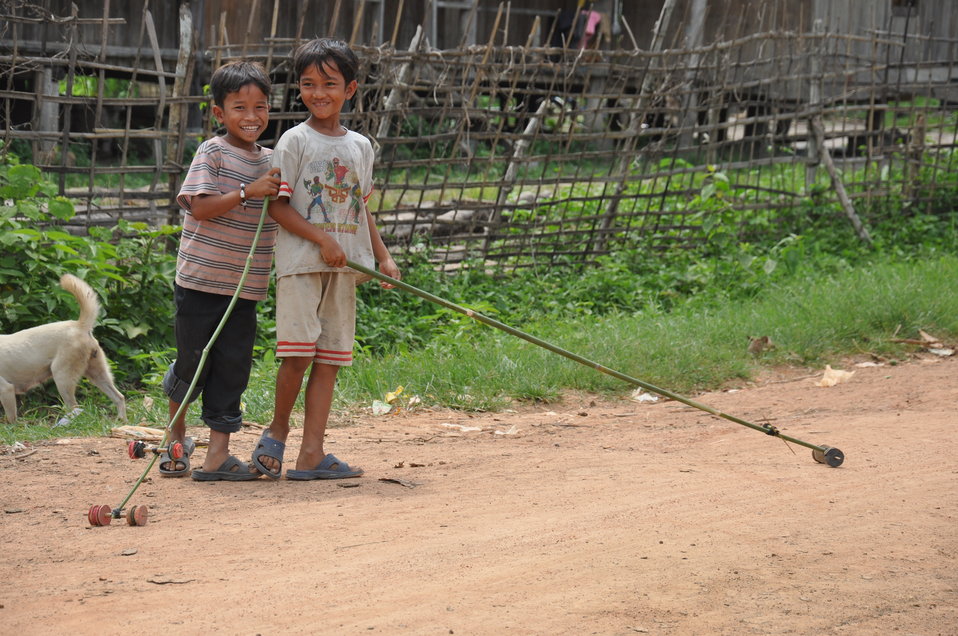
USAID supports cocoa farming communities in Central Vietnam